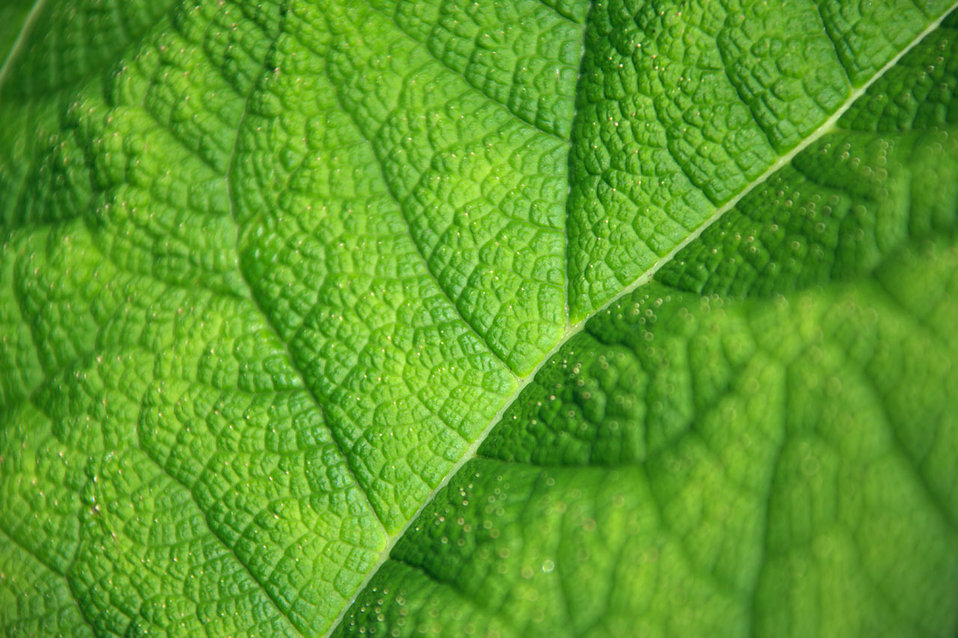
Green leaf structure

Macro photo of green leaf structure.